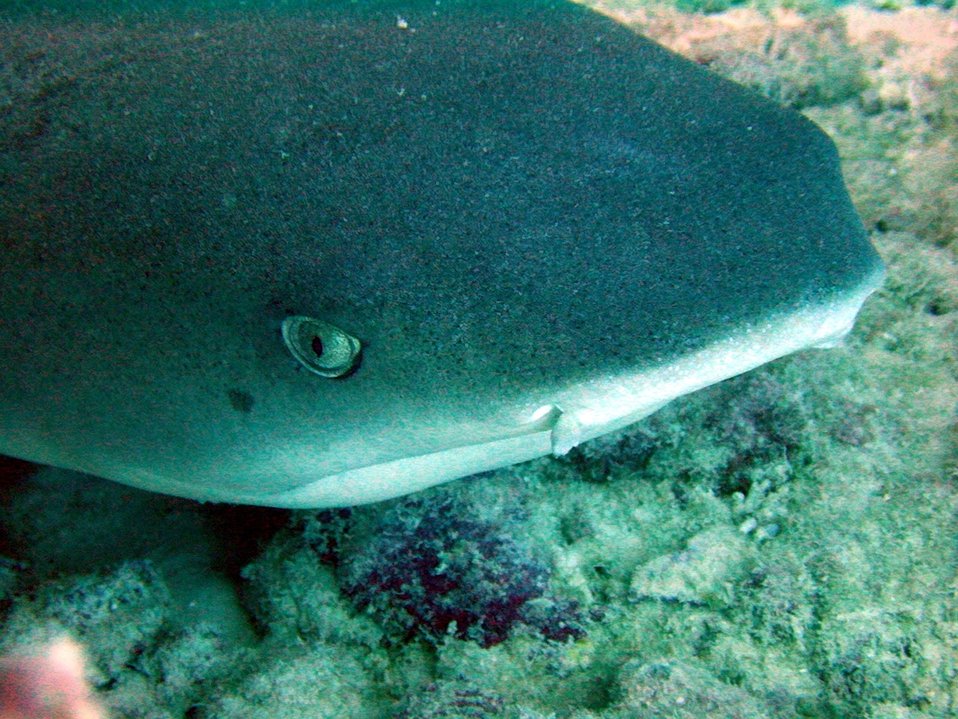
A white-tip shark (Triaenodon obesus). Hawaiian name is mano lalakea.